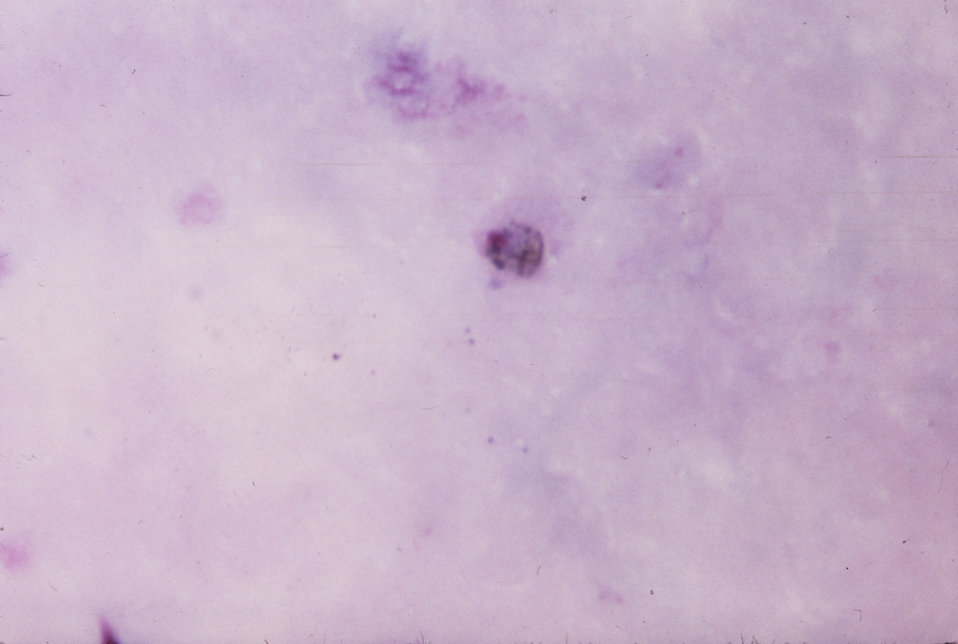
This thick film micrograph shows a mature P. ovale trophozoite with apparent light cytoplasm, pigment and stippling.